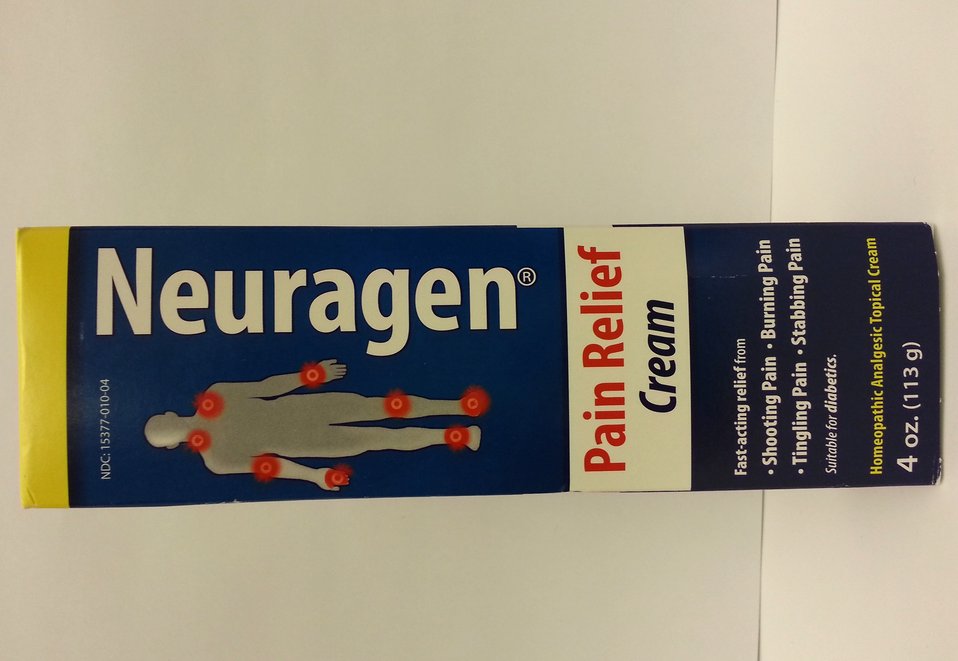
Illegally Sold Diabetes Treatments - Neuragen Pain Relief Cream

This product is an illegally sold homeopathic drug. FDA warns consumers to avoid illegally sold and potentially unsafe products sold as treatments for diabetes.